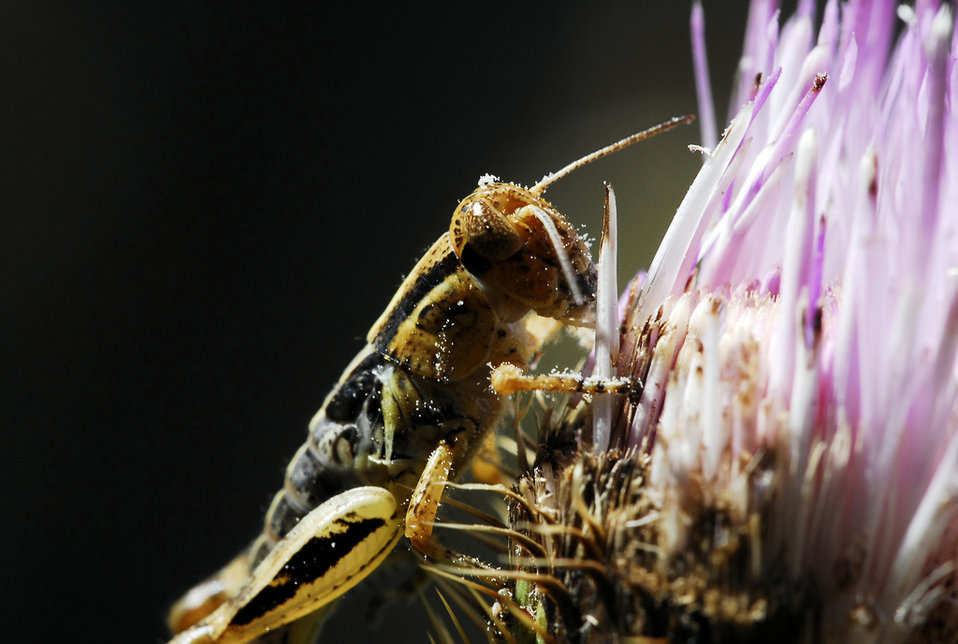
Grasshopper Eating

Image of a grasshopper eating taken by a USFWS employee and submitted to a 2009 Photo Contest.